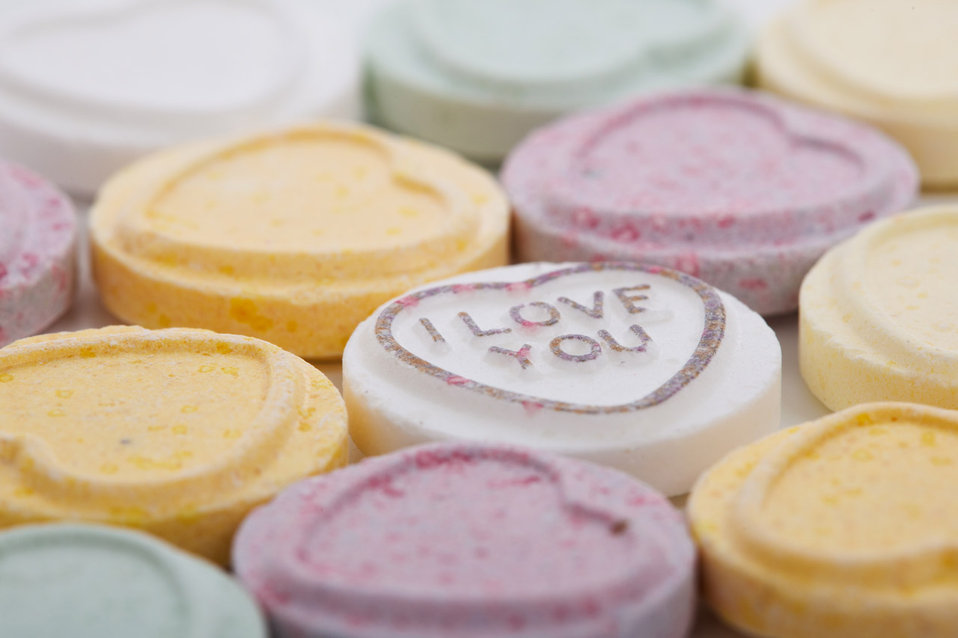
Sugar candy hearts

Small colorful sugar candy saying "i love you".